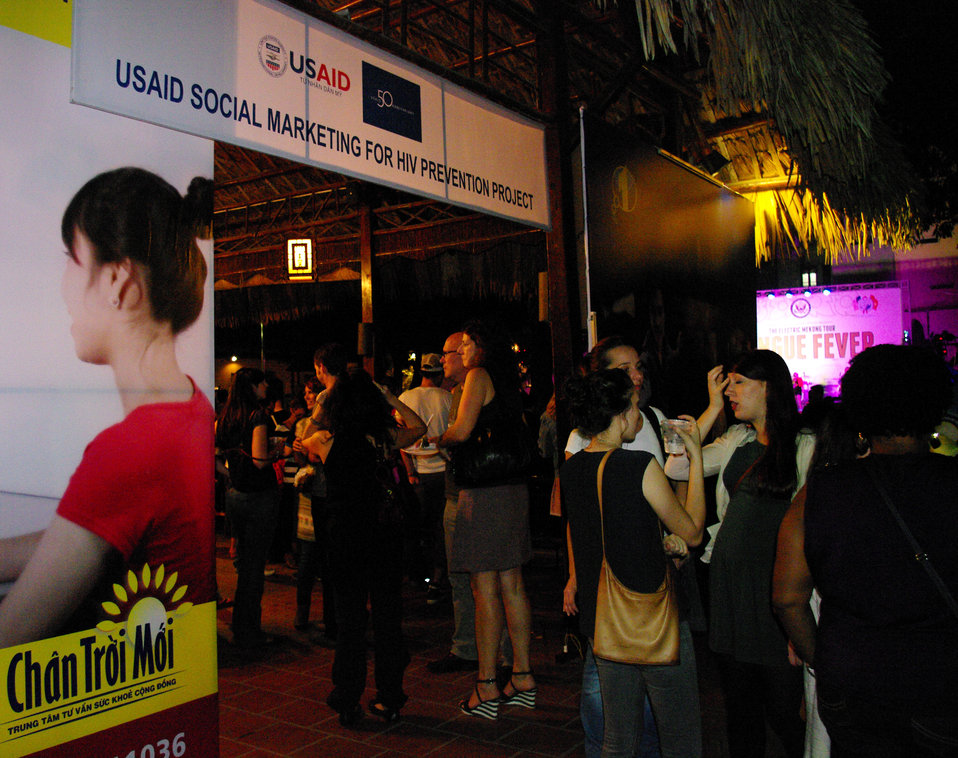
PEPFAR, U.S. Embassy Host Dengue Fever Concert in Hanoi